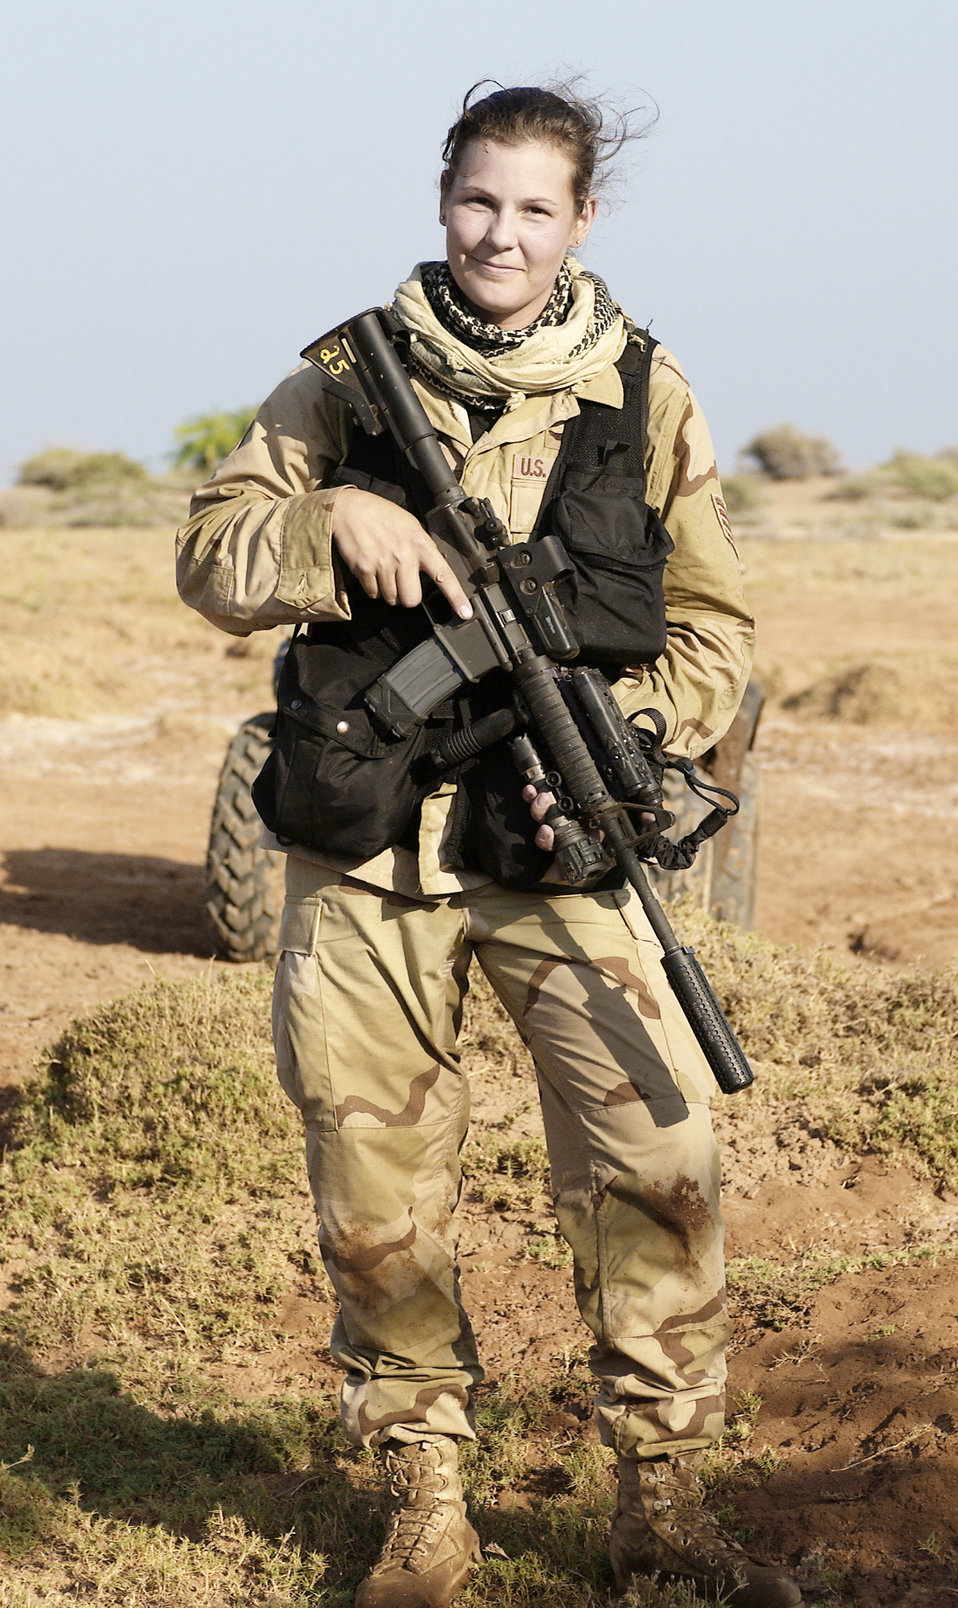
Combat photographer to compete in Warrior Games

Retired Staff Sgt. Stacy Pearsall is one of 20 Airmen selected to compete in the Warrior Games May 10 through 14 at the Olympic Training Center in Colorado Springs, Colo. Sergeant Pearsall is a former combat photographer who was assigned to the 1st Combat Camera Squadron at Charleston Air Force Base, S.C.